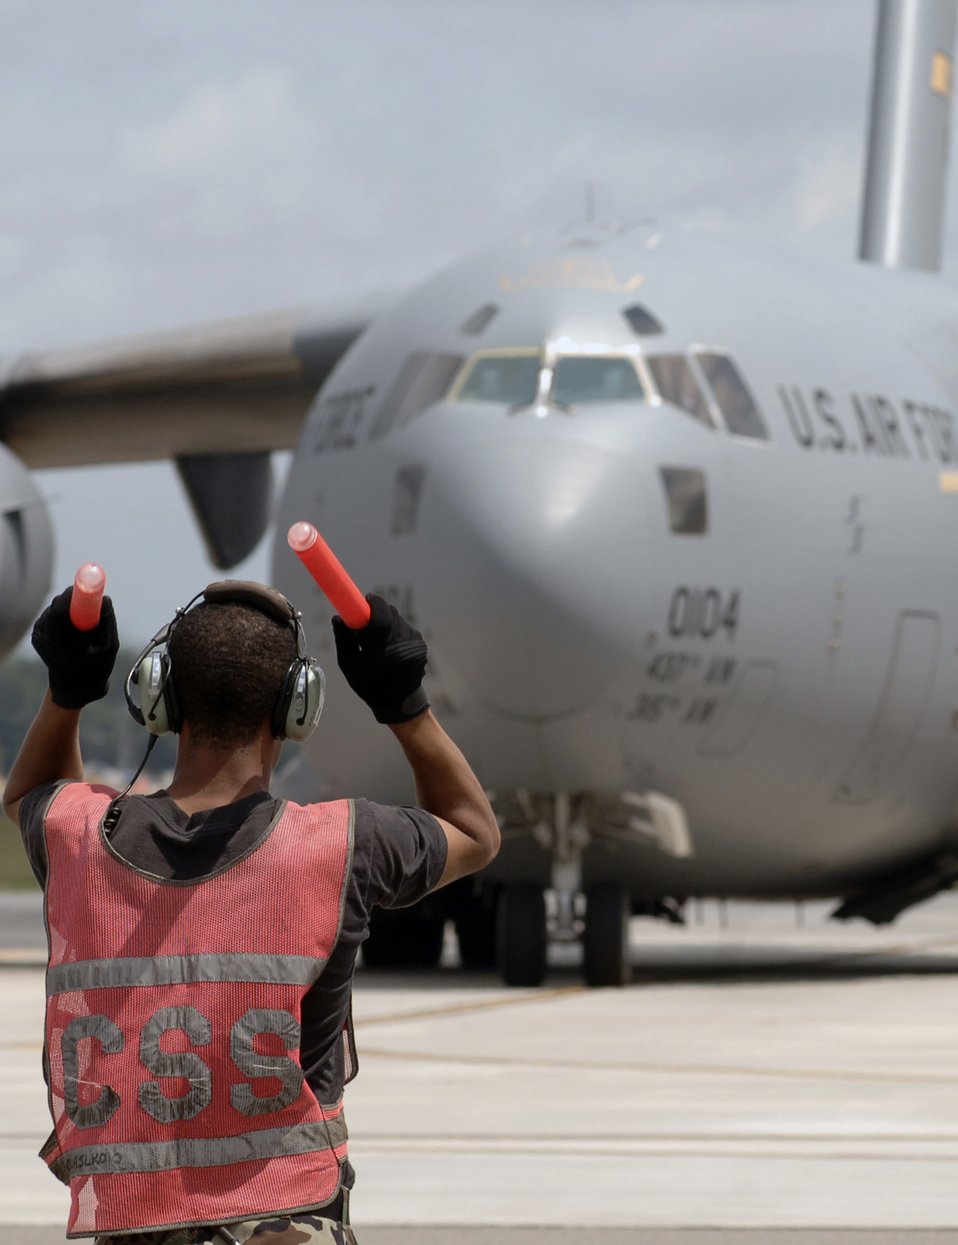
Aircraft evacuated from Charleston

Airman 1st Class Nelson Good marshals out a C-17 Globemaster III Aug. 30 from Charleston Air Force Base, S.C. Airmen from Charleston AFB are in the process of evacuating all operational C-17 aircraft on station due to impending severe weather expected from Tropical Storm Ernesto. Airman Good is from the 437th Aircraft Maintenance Squadron.